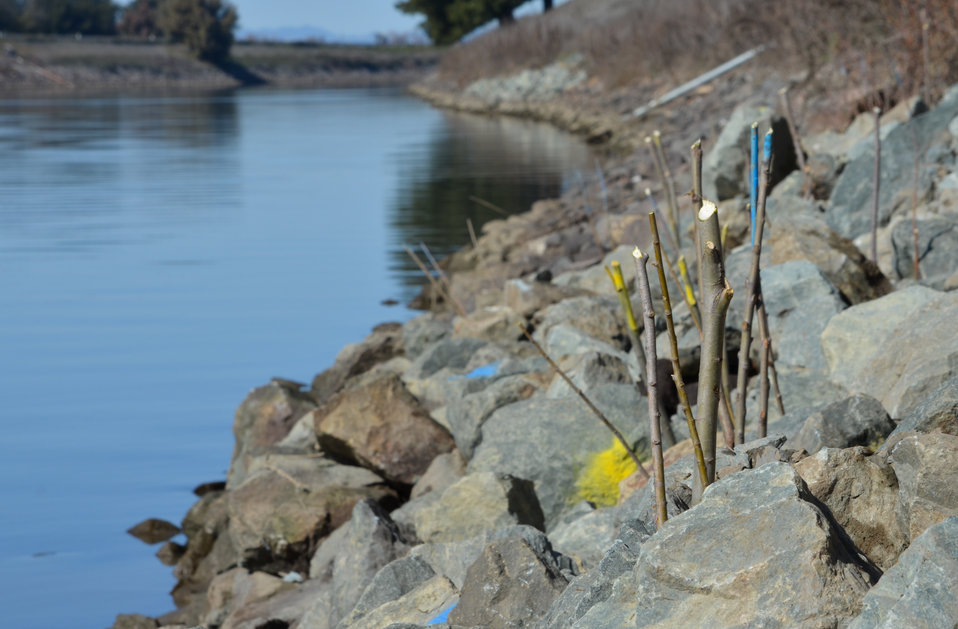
Willow poles on the Sacramento River

Willow poles planted along the Sacramento River levee near Paintersville, Calif., Feb. 11, 2013 will provide shaded riparian habitat for threatened fish species. The U.S. Army Corps of Engineers Sacramento District project aims to preserve riparian habitat following emergency levee erosion repairs between 2007 and 2009. The district worked with the U.S. Fish and Wildlife Service and National Marine Fisheries Service to design the project for habitat benefit, and is the first Corps district to receive a variance under the Corps’ levee vegetation policy to plant willows near the levee after engineering analysis showed they won’t threaten the levee.